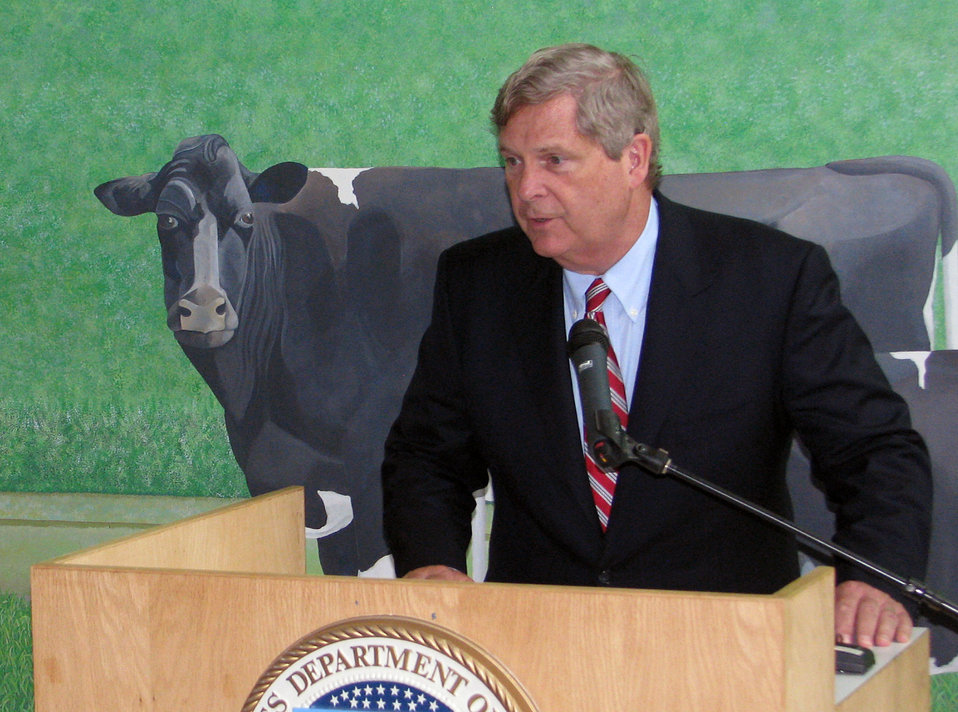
Agriculture Secretary Tom Vilsack announces the availability of funds for major research initiatives to study the weather and climatic variability on beef and dairy cattle at the University of Wisconsin in Madison, WI on Tuesday, May 7, 2013.